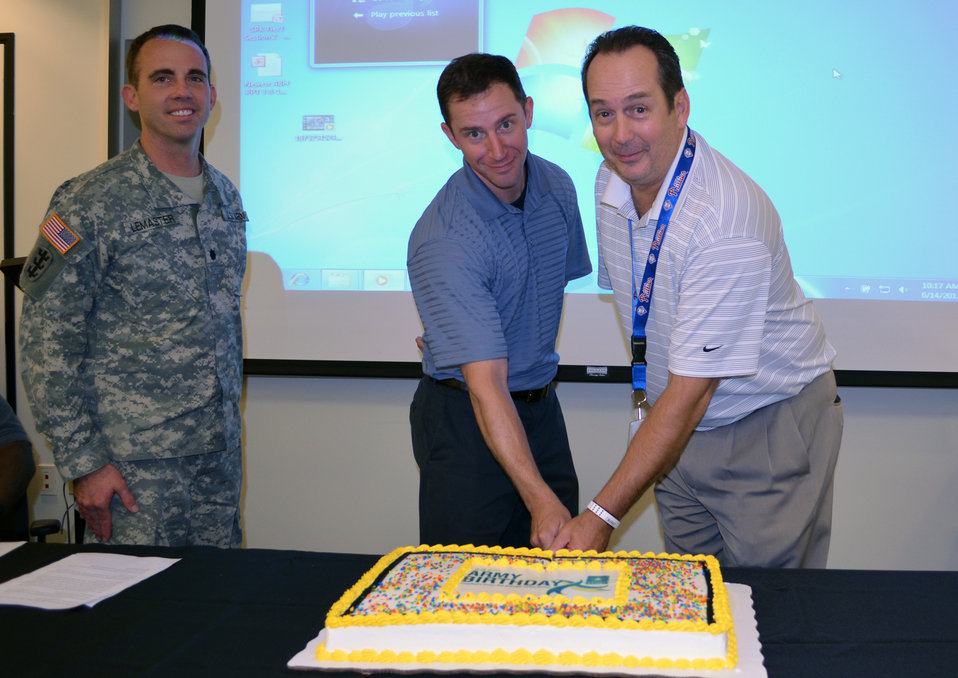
Sacramento District celebrates 237th Army Birthday

Lt. Col. Braden LeMaster (left), U.S. Army Corps of Engineers Sacramento District deputy commander, looks on as Patrick Caden (center), budget analyst, and William McDaniel, information technology chief, cut an Army birthday cake to celebrate the U.S. Army's 237th birthday in Sacramento, Calif., June 14, 2012. Caden and McDaniel were the youngest and oldest district employees in attendance during the celebration, held at the district's headquarters in Sacramento.